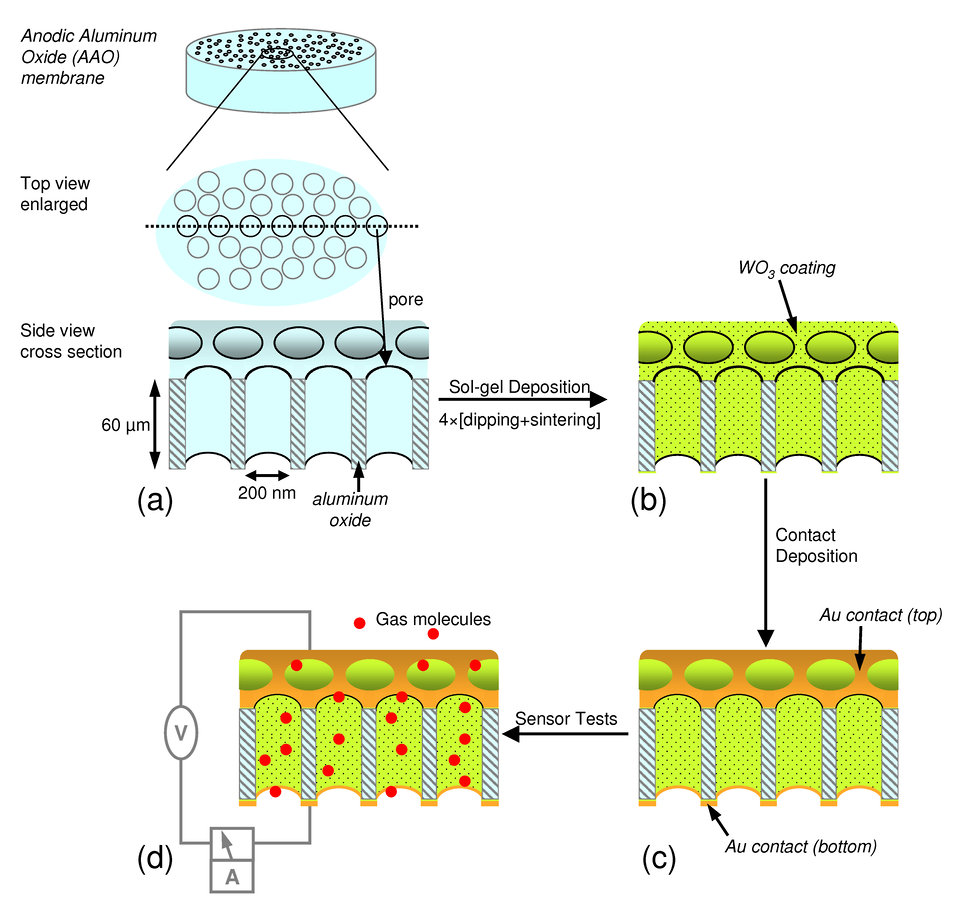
Metal-oxide nanotubes schematic

A schematic diagram (not to scale) of the preparation and application of a nanotube gas sensor based on tungsten oxide deposited on a substrate of nanoporous aluminum oxide. Perforated with millions of nanoscale holes, the aluminum oxide sheet served as a template or mold for the creation of the nanotubes. Researchers dipped the sheet in a solution of tungsten ions, allowed the sheet to dry, and sintered (a baking process characterized by incremental temperature increases used to ensure that a coating will stick) it four times, building up a thin film of tungsten oxide on the walls of the pores. Nanotubes are an excellent structure for gas sensing applications because of their high surface-to-volume ratio. The NIST team estimates that devices based on their technique will be 100 to 1,000 times more sensitive than comparable film-based sensors and may be suitable for studying biological cell stress and cell communication.